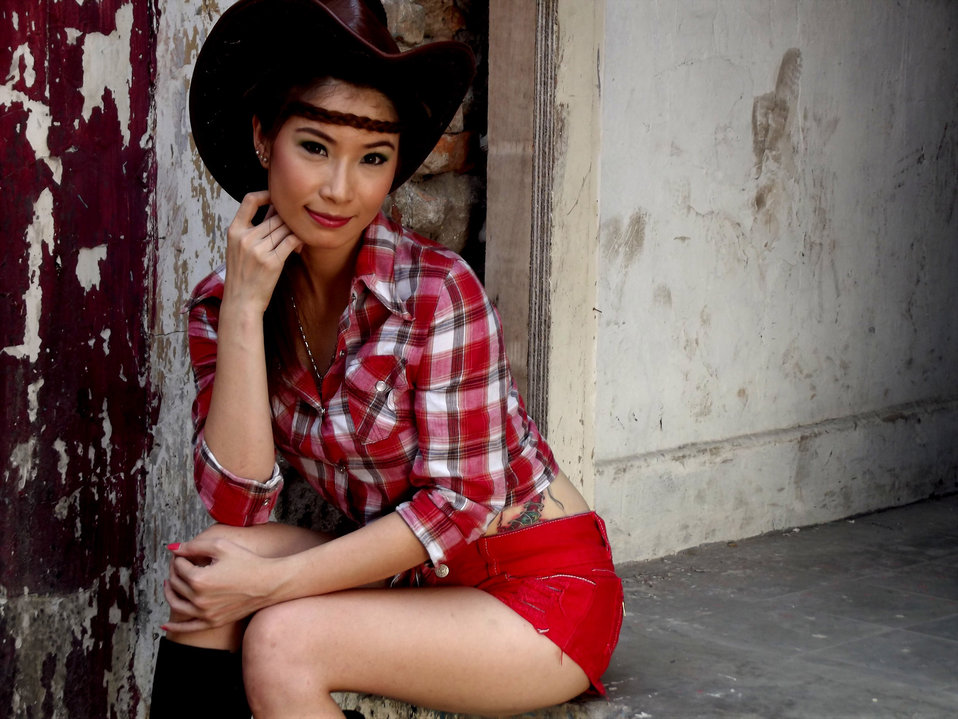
Cowgirl

Oriental female model in cowboy outfit.